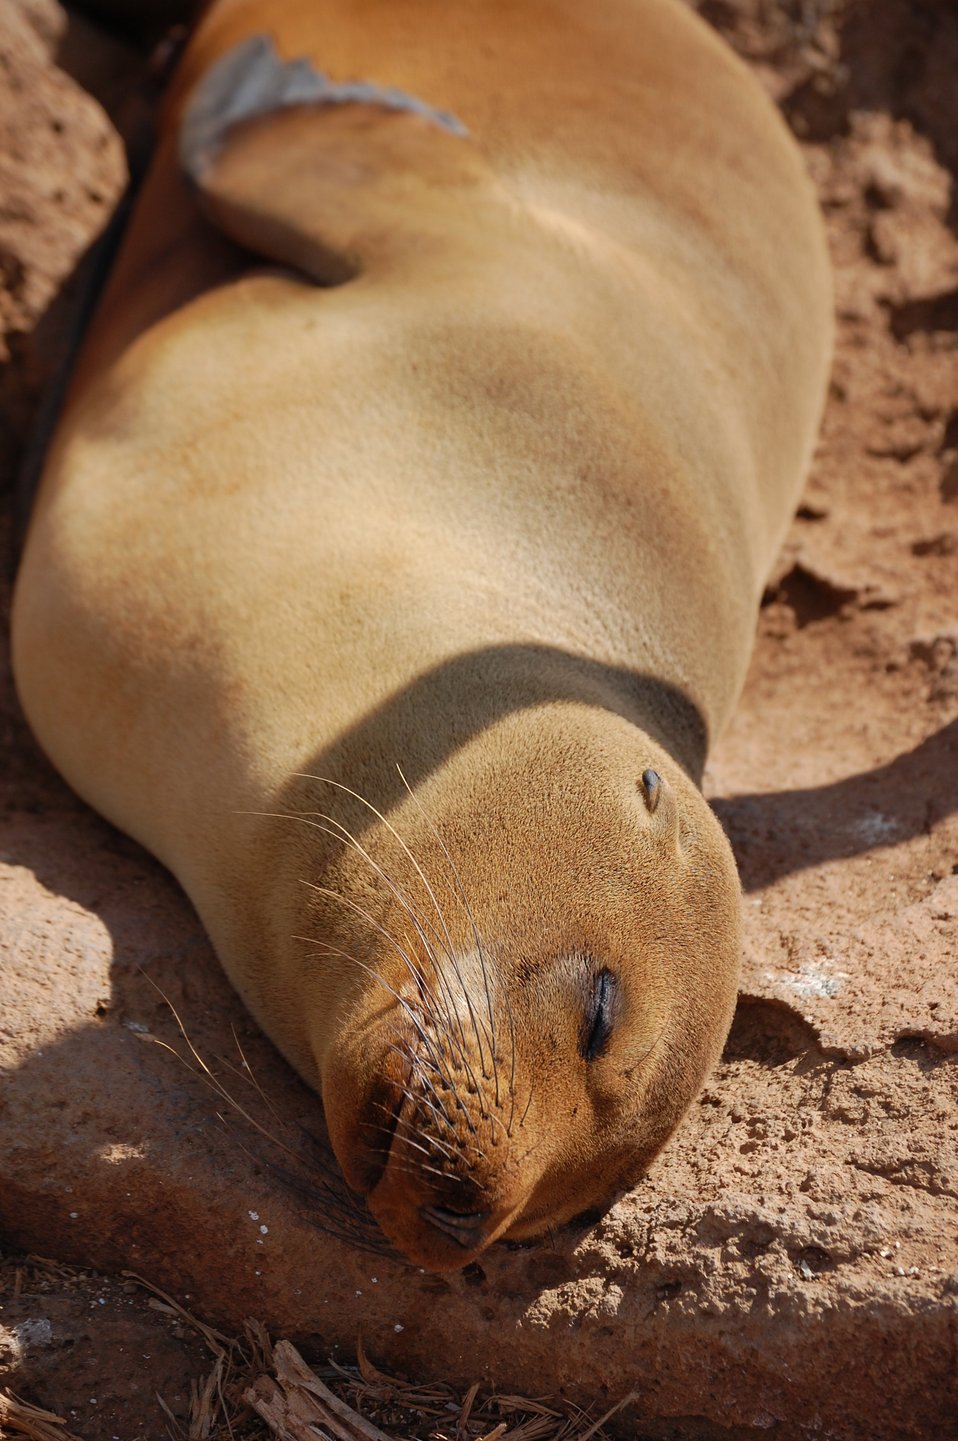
Sea lion.